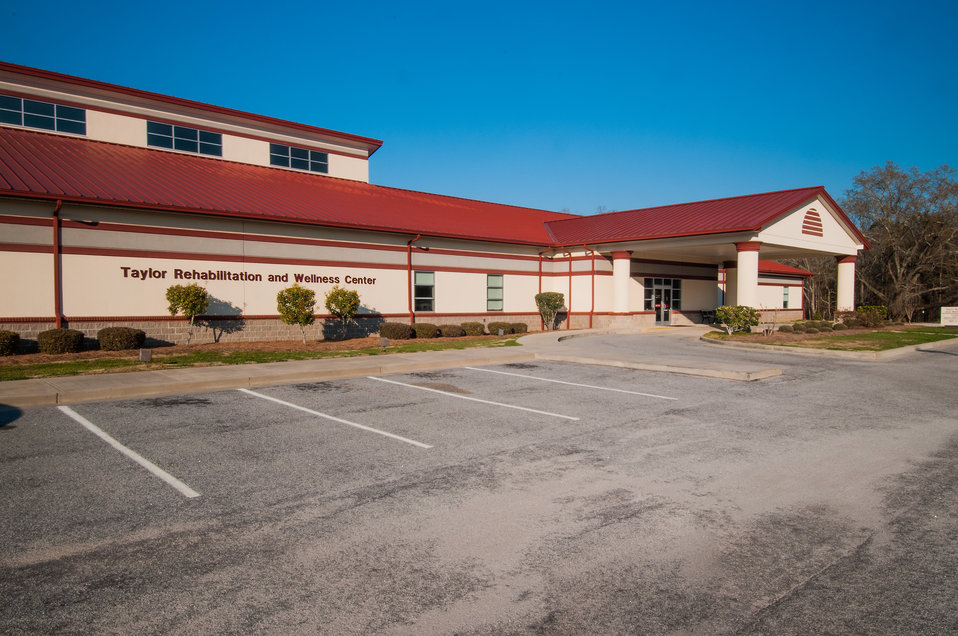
The R.J. Taylor Memorial Hospital on a sunny day in Hawkinsville, Pulaski County, GA on Mar. 6, 2013. This is the hospital’s main location and the facility is a licensed private, not-for-profit acute care facility providing emergency, specialty and primary health care. There is a second hospital located in Bleckly County, GA which provides services to residents in these two very rural counties of Georgia. These counties have a high percentage of people living below the state average poverty level and are considered the most economically distressed. The hospital has purchased an Electronic Medical Records System under an incentive program by the Federal government through the U.S. Department of Agriculture (USDA) Rural Development (RD) Community Facilities Loan (CF) that ensures fiscally responsive access to superior quality integrated health care.